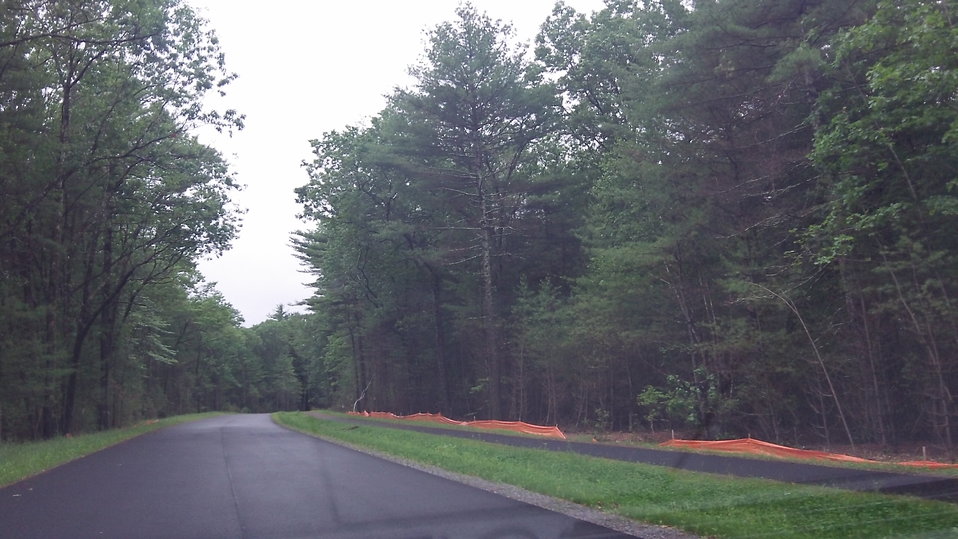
Assabet River National Wildlife Refuge, Sudbury, MA.